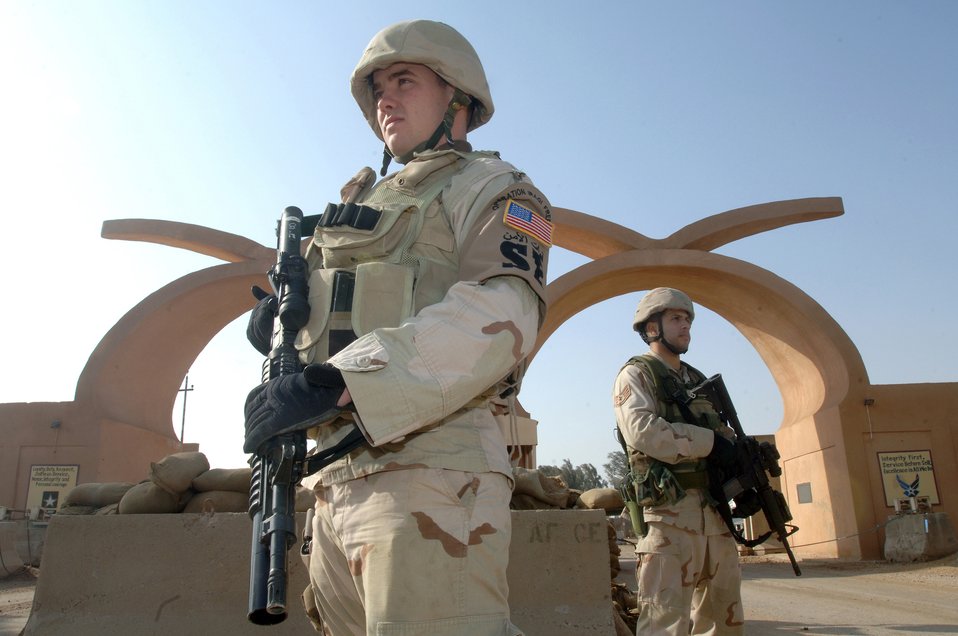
All secure

ALI BASE, Iraq (AFPN) -- Airman 1st Class Joshua Williams (left) and Staff Sgt. Marcus Serrano are ready to check ID cards at a base control point Feb. 16. The Airmen are with the 407th Expeditionary Security Forces Squadron.